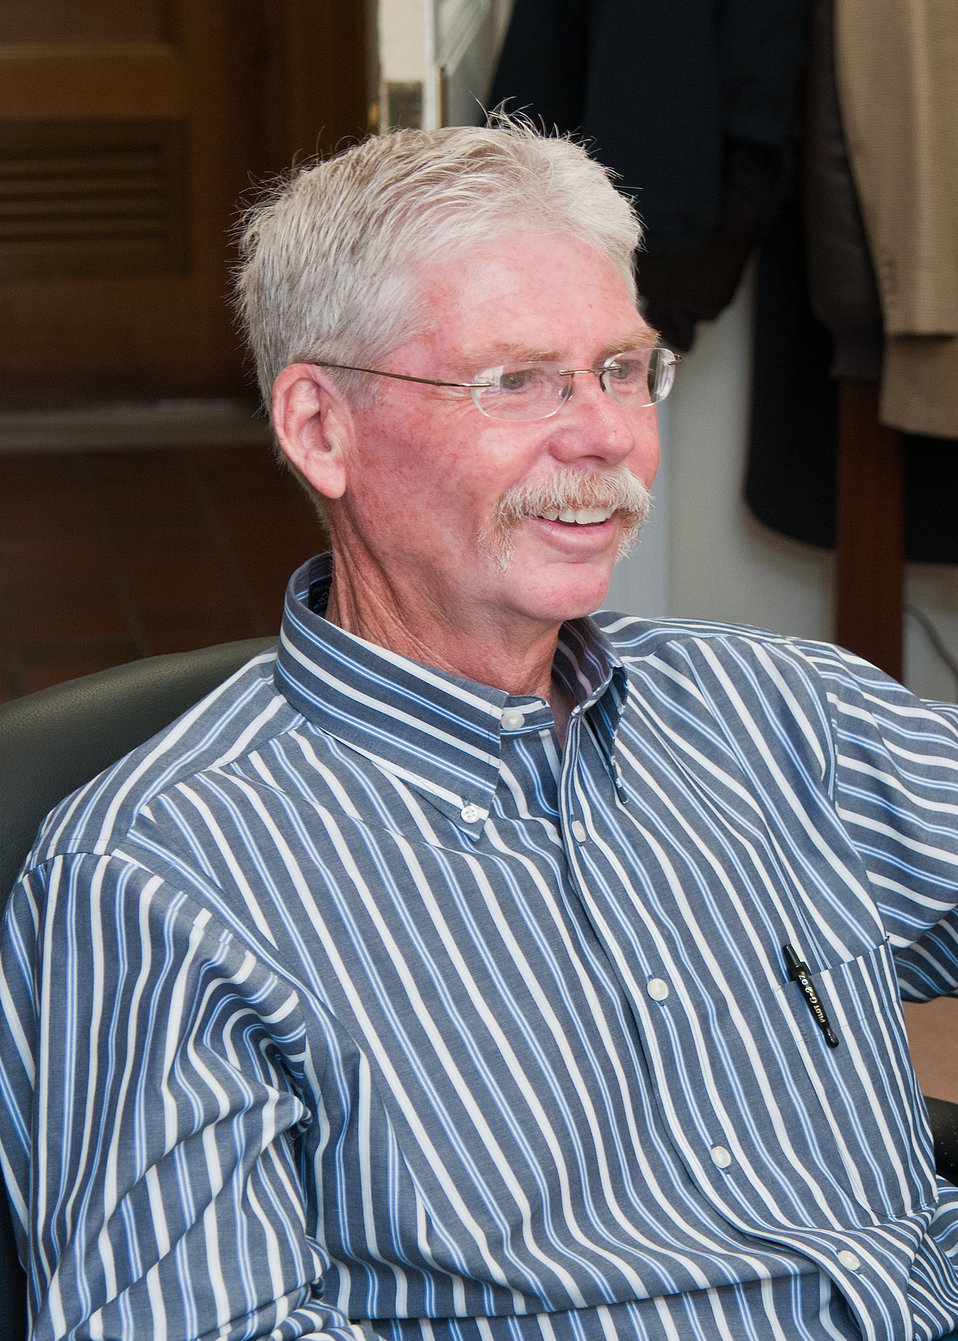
110308 APHIS RBN 2563

George Graves, Wildlife Biologist, Animal and Plant Health Inspection Service (APHIS), Wildlife Services, Boise, Idaho describes his experience while on detail to Iraq while participating in a program initiated USDA, APHIS and U.S. Air Force Central to assist in keeping runway operations free of wildlife, at the U.S. Department of Agriculture in Washington, D.C., on Tuesday, March 8, 2011.